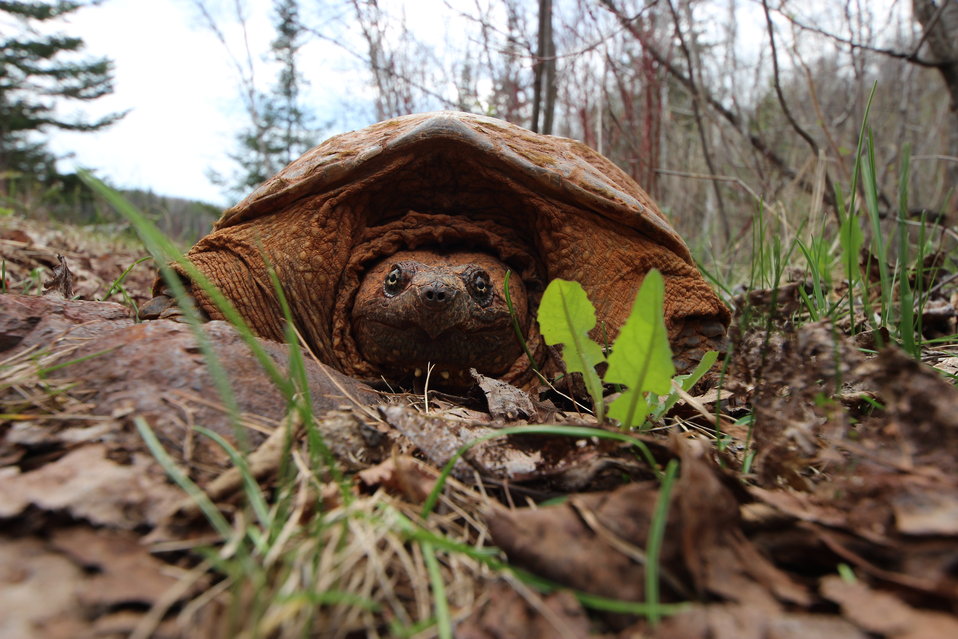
Iron ore stained snapping turtle